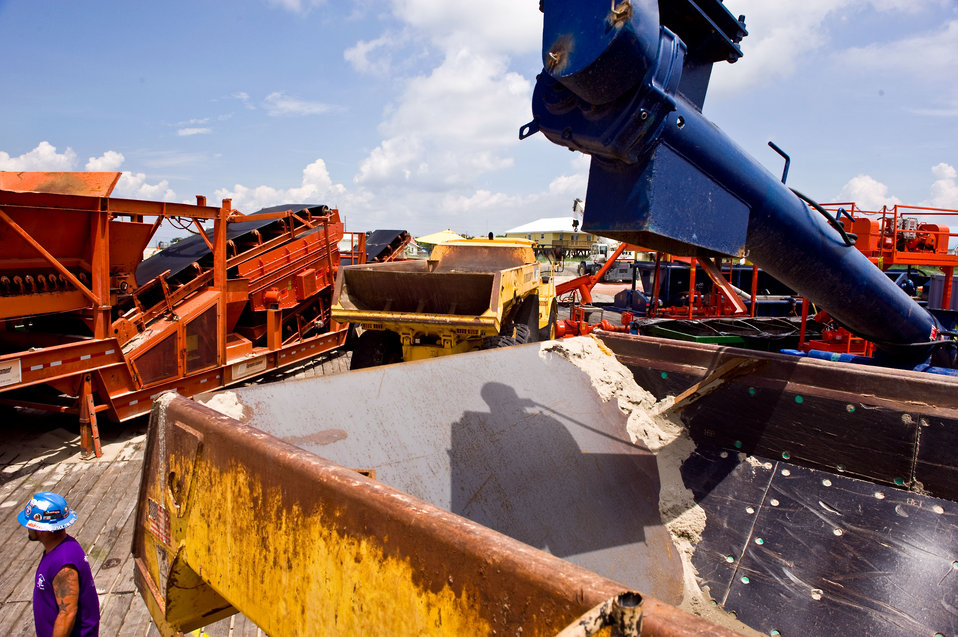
August 7, Efforts to wash oiled sand continues

Efforts have been underway to collect oil-contaminated sand to put through a series of hot water washes. Oily wash water is collected and disposed of, and clean sand is returned to the beach. This innovative process prevents tons of sand from being disposed of into landfills, reduces the depletion of sand from the beaches, and helps to eliminate oil from the beaches of the Gulf Coast.